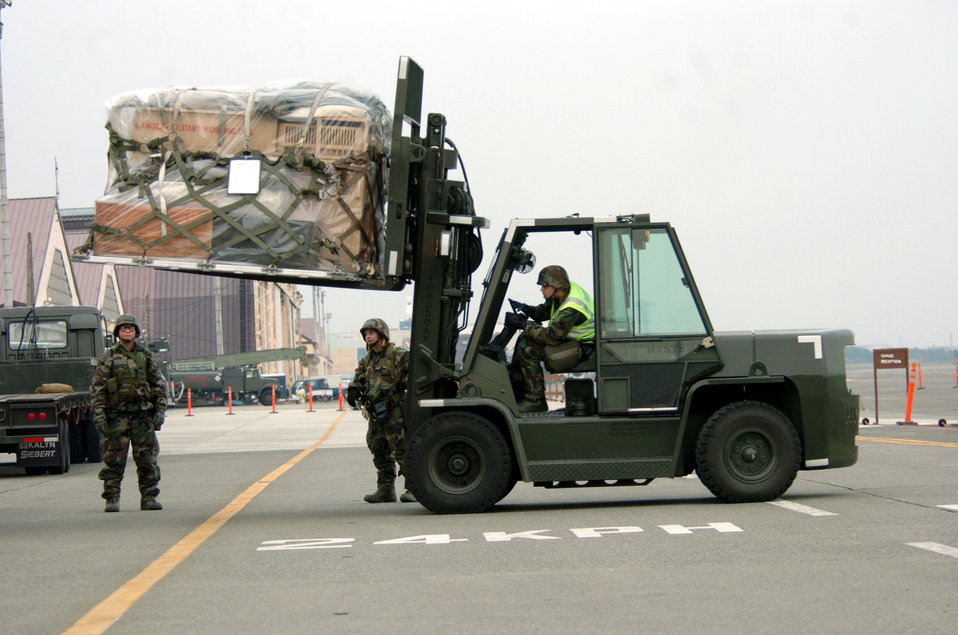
ORE you ready?

YOKOTA AIR BASE, Japan -- Airmen from the 374th Airlift Wing move cargo on the flightline during an operational readiness exercise here Nov. 8. The exercise tested the 374th Airlift Wing's command and control, operations and mission support functions.